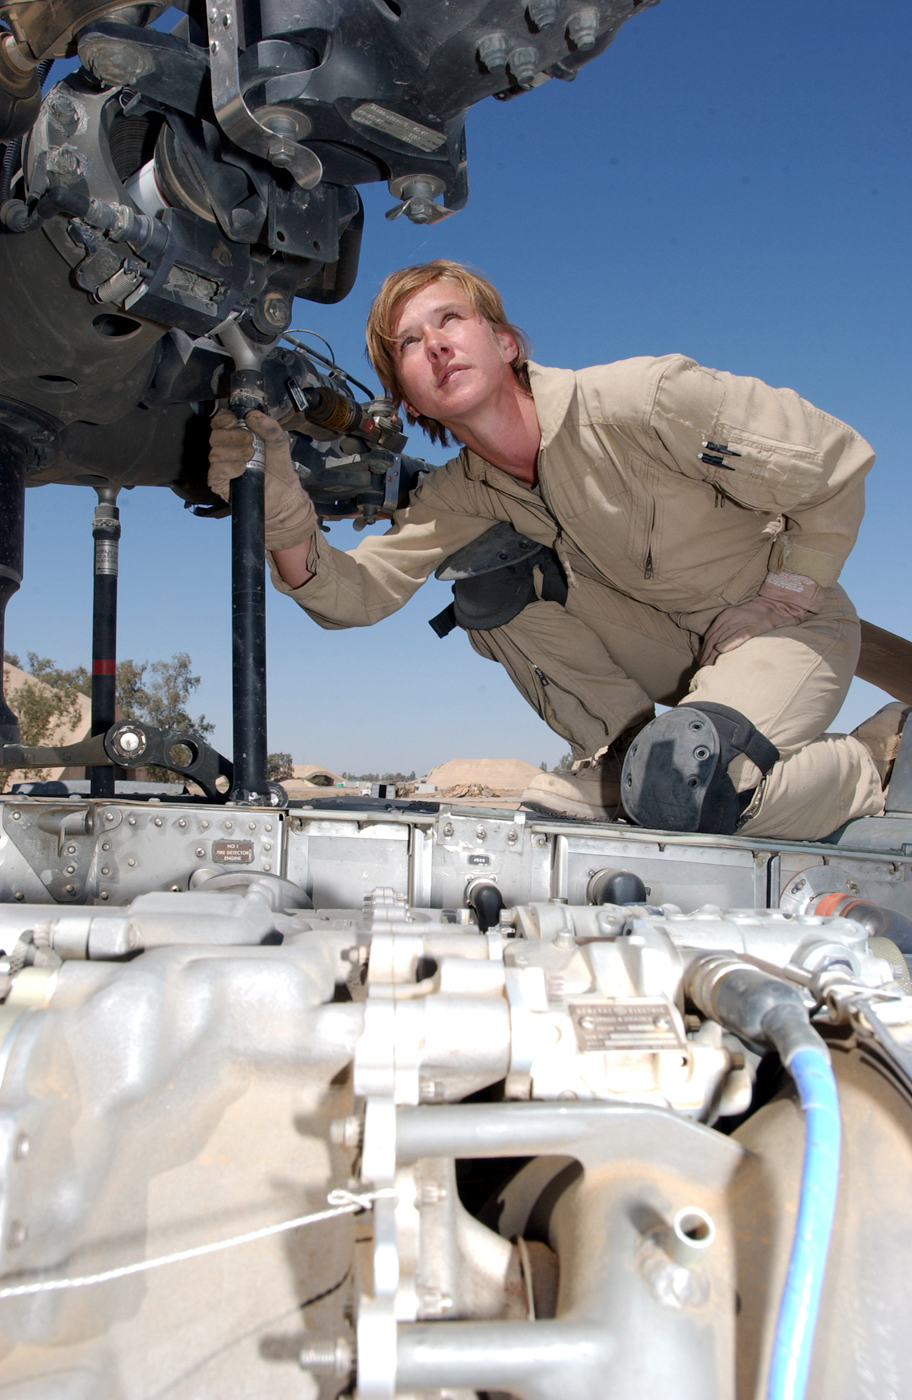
Combat rescue

BALAD AIR BASE, Iraq -- Airman 1st Class Melody Boates checks the main rotor on an HH-60 Pave Hawk helicopter. Airman Boates is a flight engineer with 64th Expeditionary Rescue Squadron here, and she is deployed from the 41st Rescue Squadron at Moody Air Force Base, Ga.